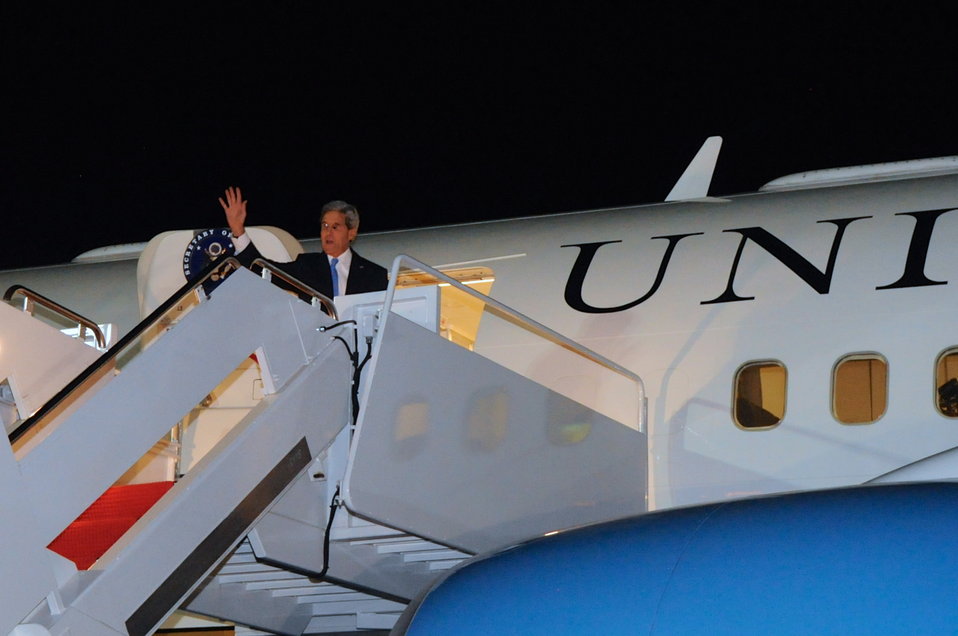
Secretary Kerry Departs from Andrews Air Force Base for Geneva

8:48 p.m., September 11, 2013 - U.S. Secretary of State John Kerry waves goodbye as he departs from Andrews Air Force Base in Maryland, destined for Geneva, Switzerland, and negotiations with Russian officials about the elimination of Syrian chemical weapons.